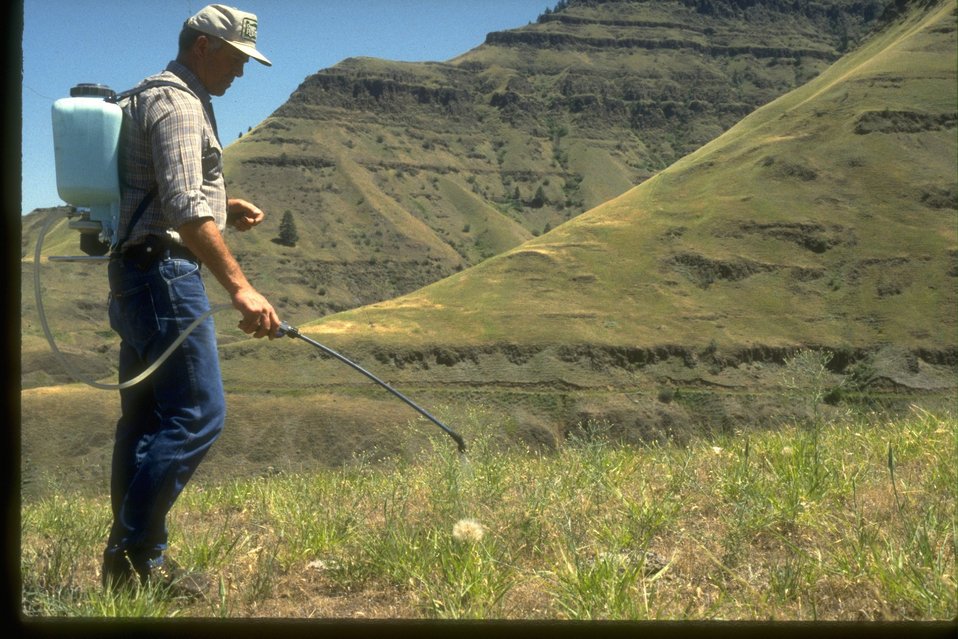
Larry Aschenbrenner of the Forest Service spaying yellow starthistle in the Hells Canyon National Recreation area.